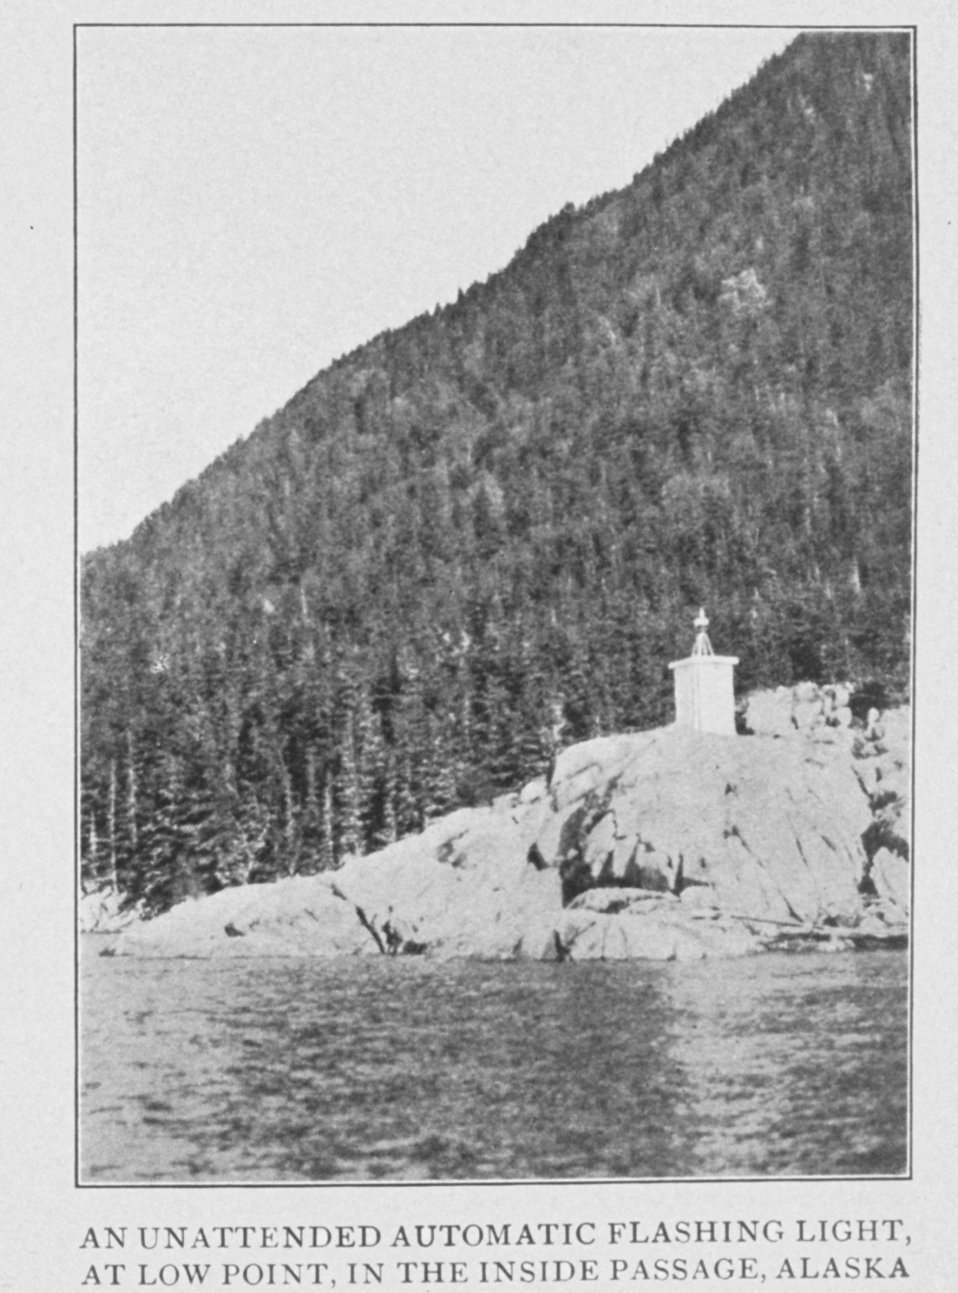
An Unattended Automatic Flashing Light, at Low Point, in the Inside Passage, Alaska. In: 'Lighthouses and Lightships of the United States' by George R. Putnam, p. 148, 1917. Houghton Mifflin and Company, Boston. Library Call No. 527.7 P98.